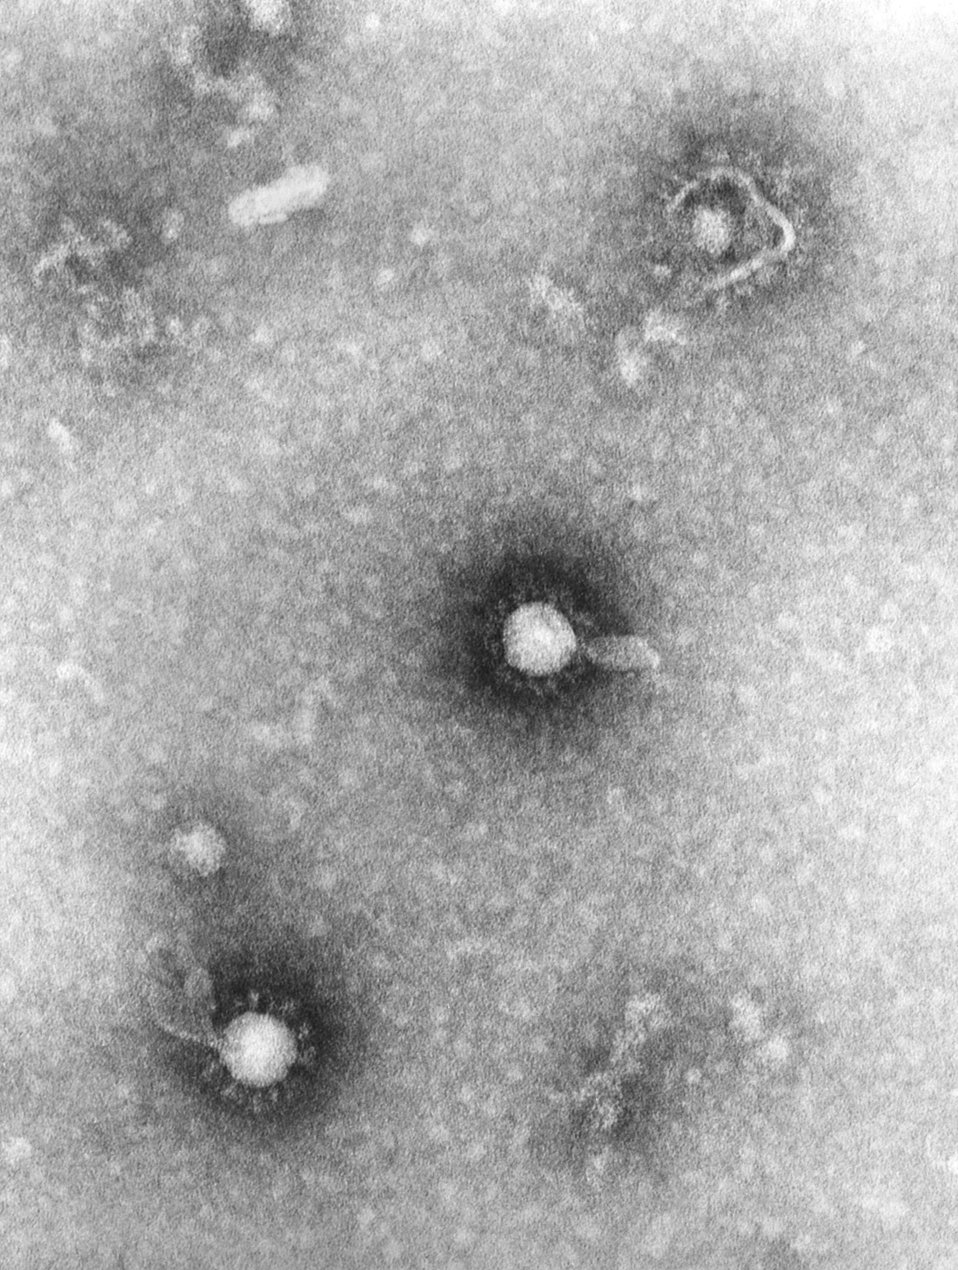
This negatively-stained 1975 transmission electron micrograph (TEM) revealed the presence of a number of Eastern equine encephalitis (EEE) virus virions in this tissue specimen. VEE is a Togaviridae family member, and a member of the genus Alphavirus.Eastern equine encephalitis (EEE) is a mosquito-borne viral disease. EEE virus (EEEV) occurs in the eastern half of the United States where it causes disease in humans, horses, and some bird species. Because of the high mortality rate, EEE is regarded as one of the most serious mosquito-borne diseases in the United States.